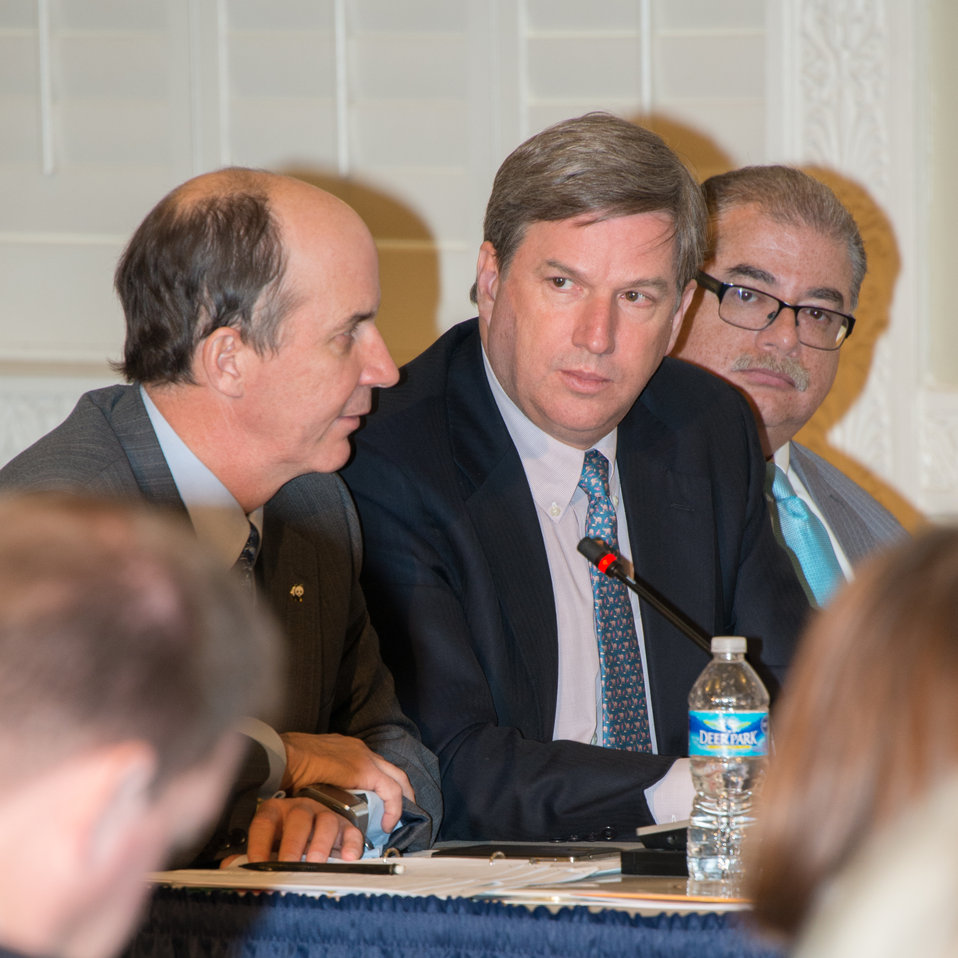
Public Meeting of Advisory Council on Wildlife Trafficking

Members of the Advisory Council on Wildlife Trafficking

From left to right: Carter S. Roberts, President and CEO, World Wildlife Fund; Cristián T. Samper, President and CEO, Wildlife Conservation Society; Bryan Arroyo, Assistant Director for International Affairs, USFWS